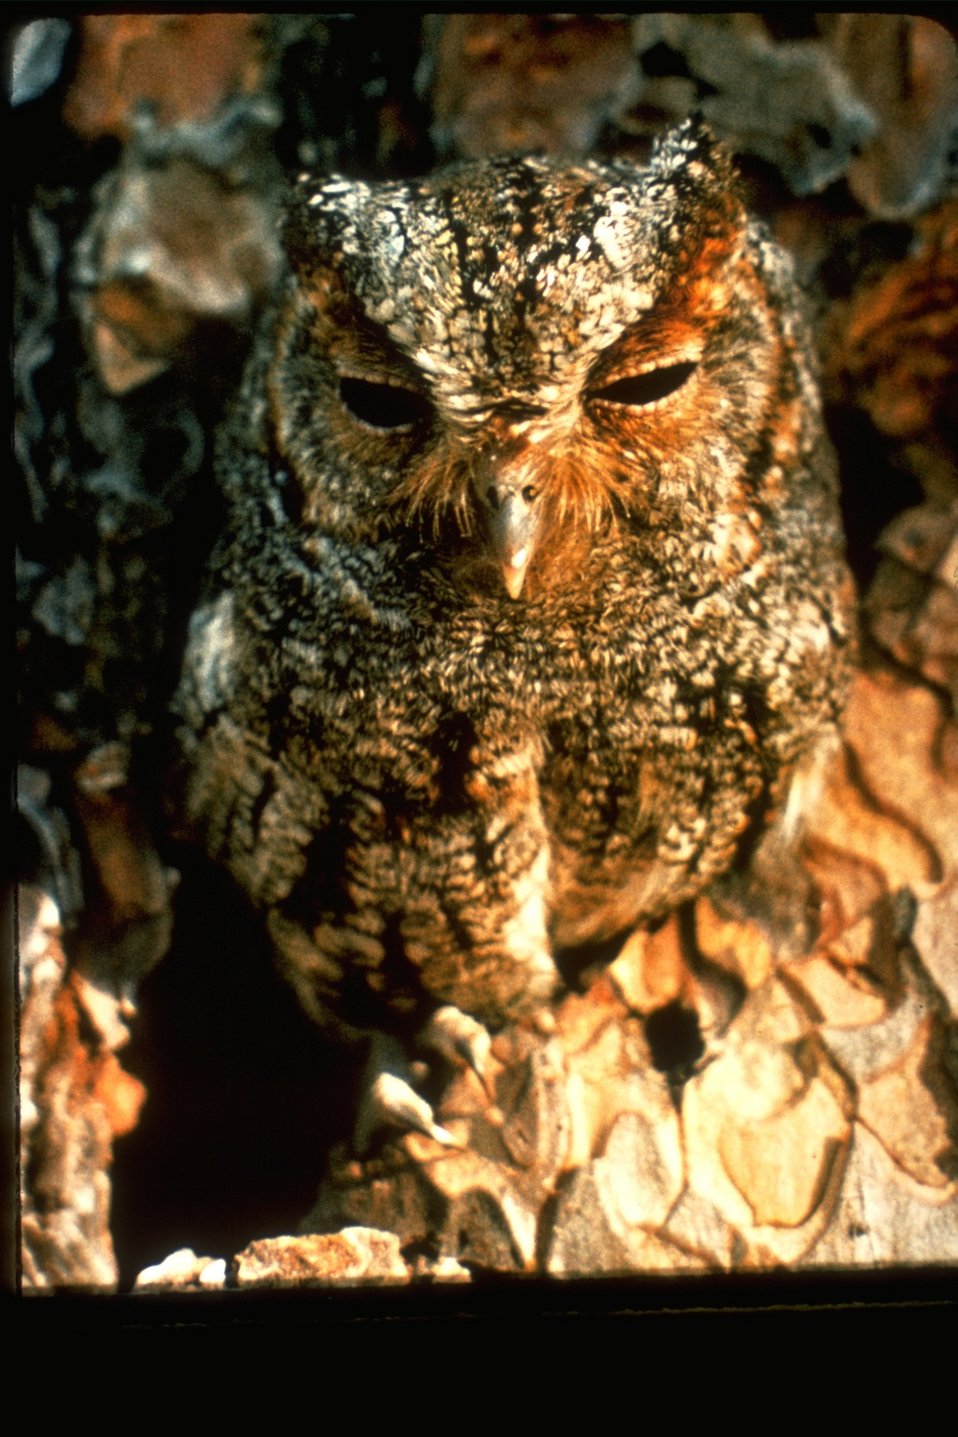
A flammulated owl.